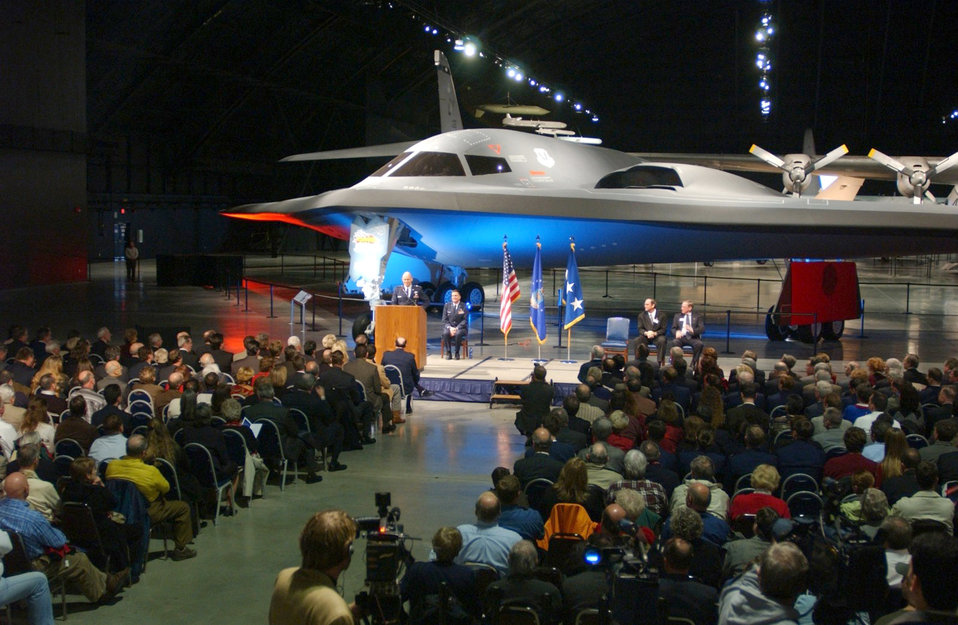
'Spirit of Freedom'

WRIGHT-PATTERSON AIR FORCE BASE, Ohio -- U.S. Air Force Museum officials formally inducted a B-2 Spirit stealth bomber into the institution's aircraft collection Dec. 16. The Air Force's national museum is the first place to permanently exhibit the stealth bomber to the public.